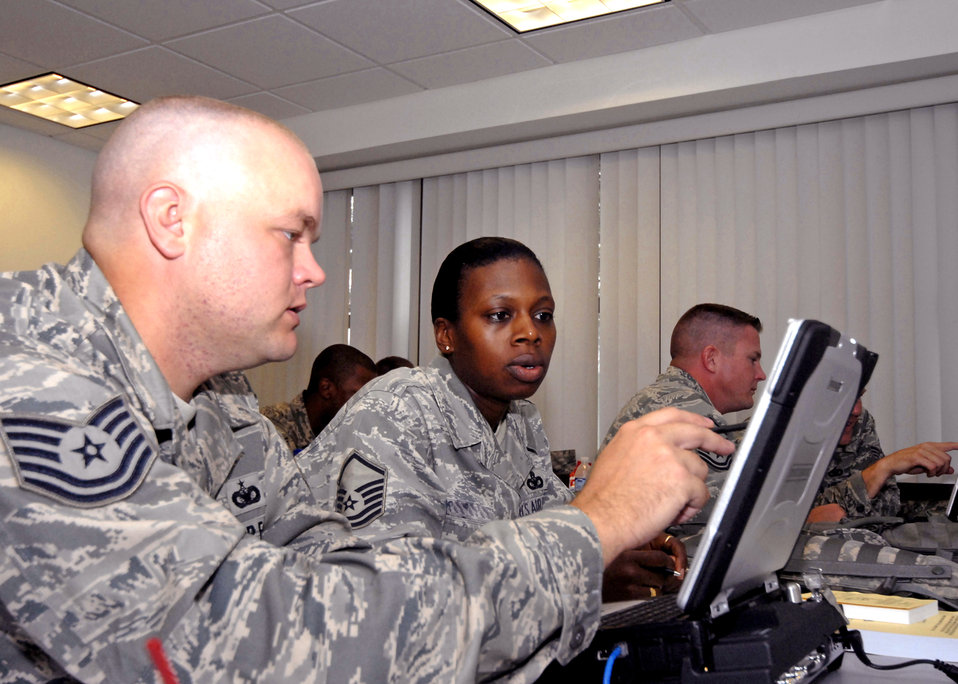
Joint training initiative at Expeditionary Center prepares security forces Airmen for battlefield

Security forces Airmen train on the Army's Blue Force Tracker system during their pre-deployment training at the Air Force Expeditionary Center's 421st Combat Training Squadron Aug. 29, 2009, at Joint Base McGuire-Dix-Lakehurst, N.J. The Blue Force Tracker is a system that gives air and ground units and their commanders a real-time picture of the battlefield.